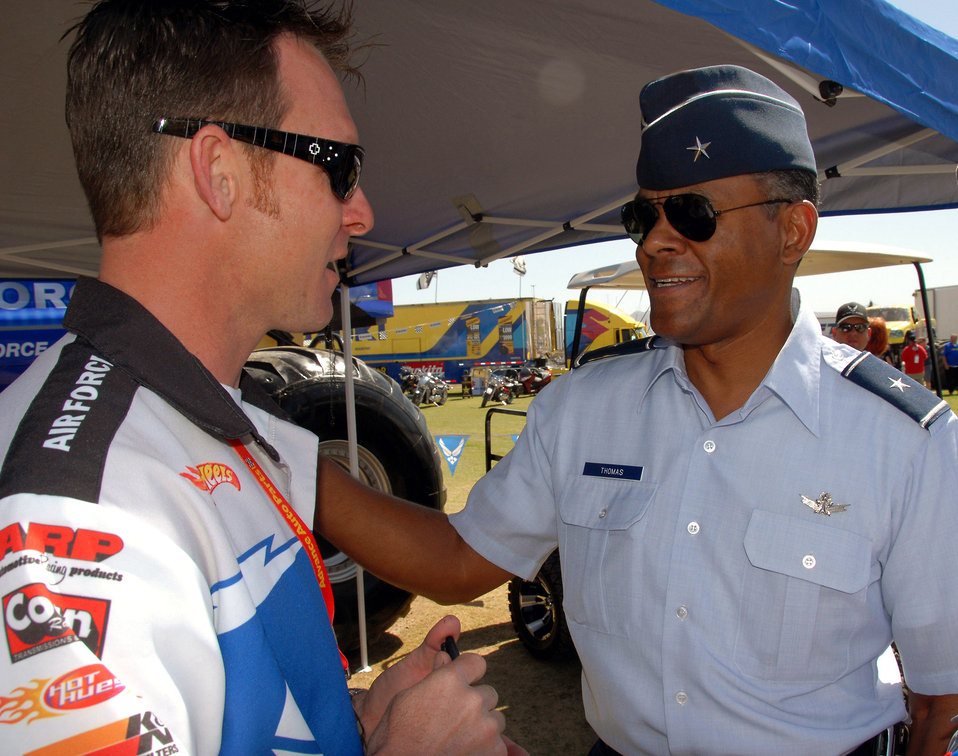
Air Force monster truck wows Las Vegas crowd

Brig. Gen. Everett H. Thomas (right) gets briefed on the Air Force Afterburner monster truck by Damon Bradshaw March 29 in Las Vegas. Afterburner and Mr. Bradshaw were in Las Vegas to compete in the Monster Jam World Finals. General Thomas conducted a swearing-in ceremony for more than 20 new Air Force members at the event. General Thomas is the Air Force Warfare Center vice commander at Nellis Air Force Base, Nev. Mr. Bradshaw is the driver of the Air Force Afterburner monster truck.